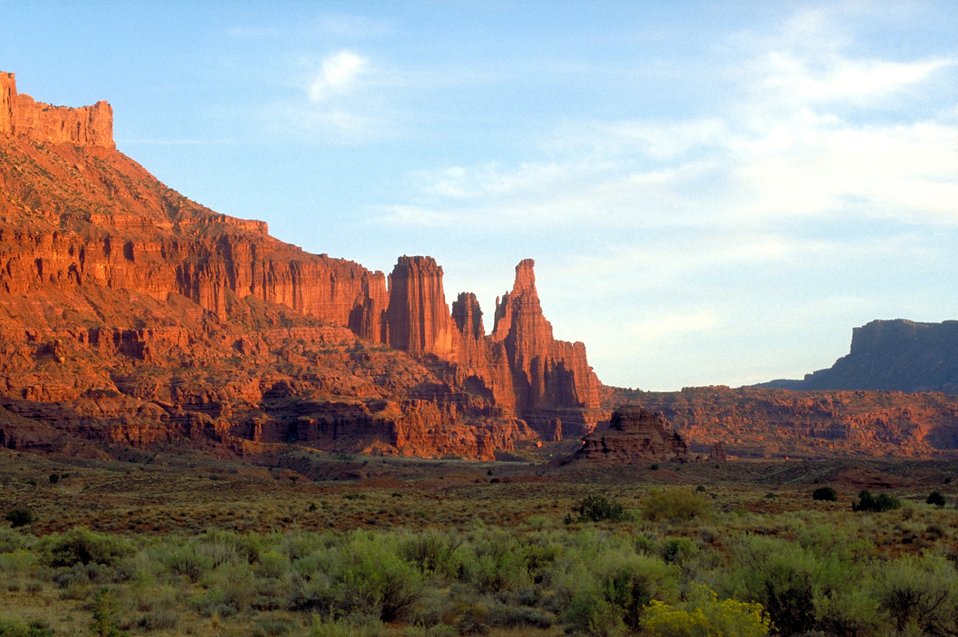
Fisher Towers along Highway 128, near Moab, Utah.